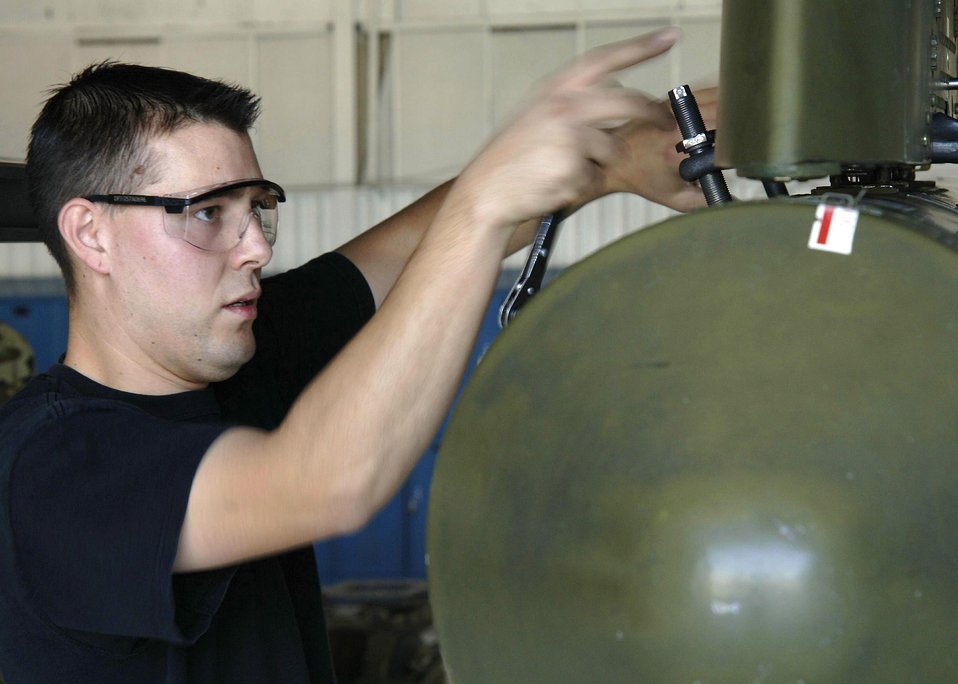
Load crew competition

Senior Airman Joseph Harrison adjusts a flare dispenser during the 355th Wing